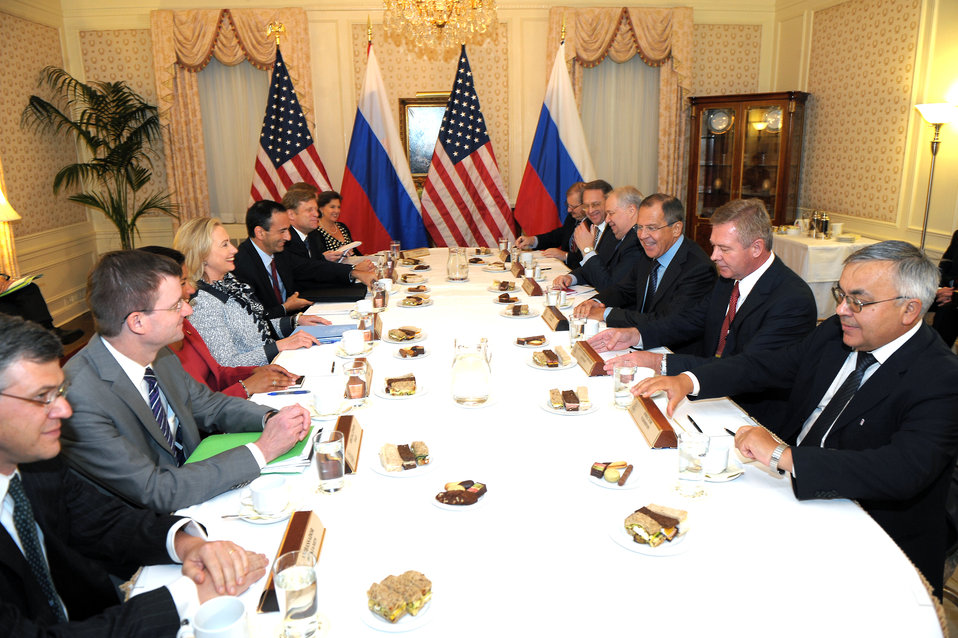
Secretary Clinton Meets with Russian Foreign Minister Lavrov

U.S. Secretary of State Hillary Rodham Clinton holds a bilateral meeting with Russian Foreign Minister Lavrov at the Waldorf-Astoria in New York, New York, on September 19, 2011.